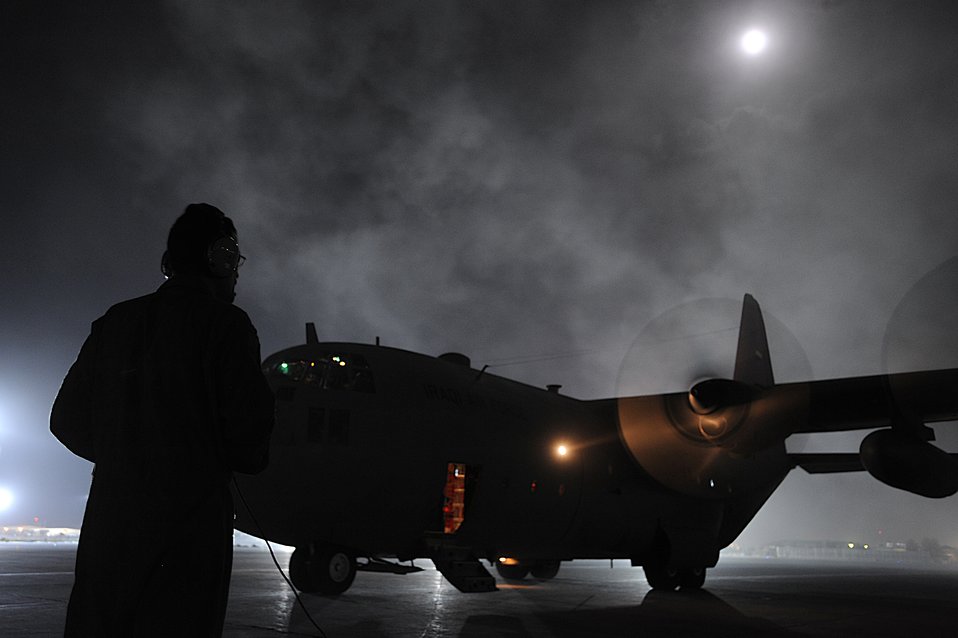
Working by moonlight

An Iraqi airman waits for cargo for a C-130 aircraft Oct. 11 at Joint Base Balad, Iraq. The Iraqi airman was on a cargo resupply mission with members of the U.S. Air Force 370th Air Expeditionary Advisory Squadron. He is assigned to 23rd Squadron, which operates three C-130s used for transporting troops, supplies and distinguished visitors.